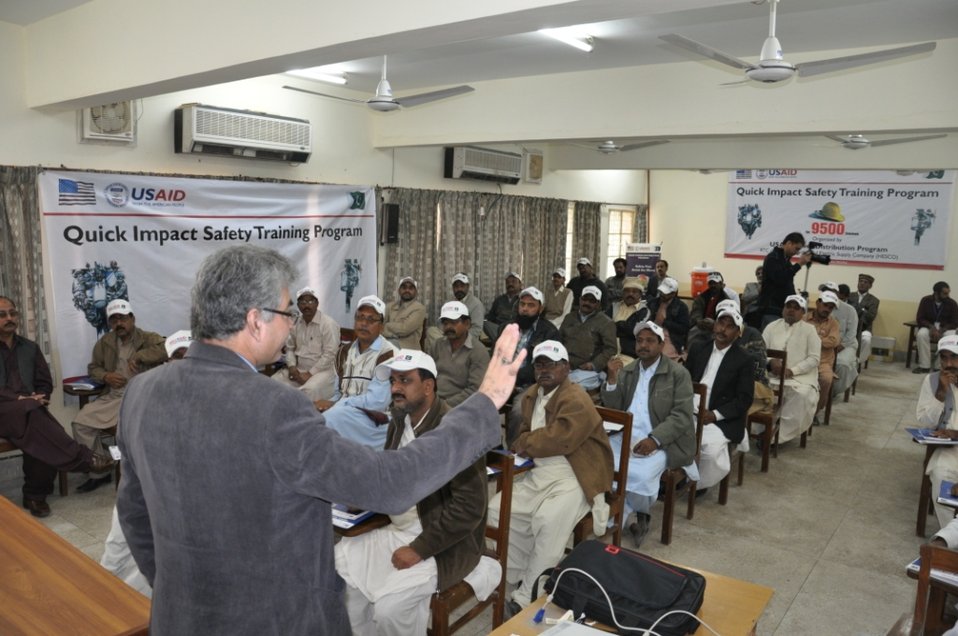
Power Distribution Safety Training Program

Jamshoro, December 18, 2011 - Mr.Tufaif Sheikh, seconded member to USAID Power Distribution Programs HR&CM team ad dressing participants of the safety training at HESCO.